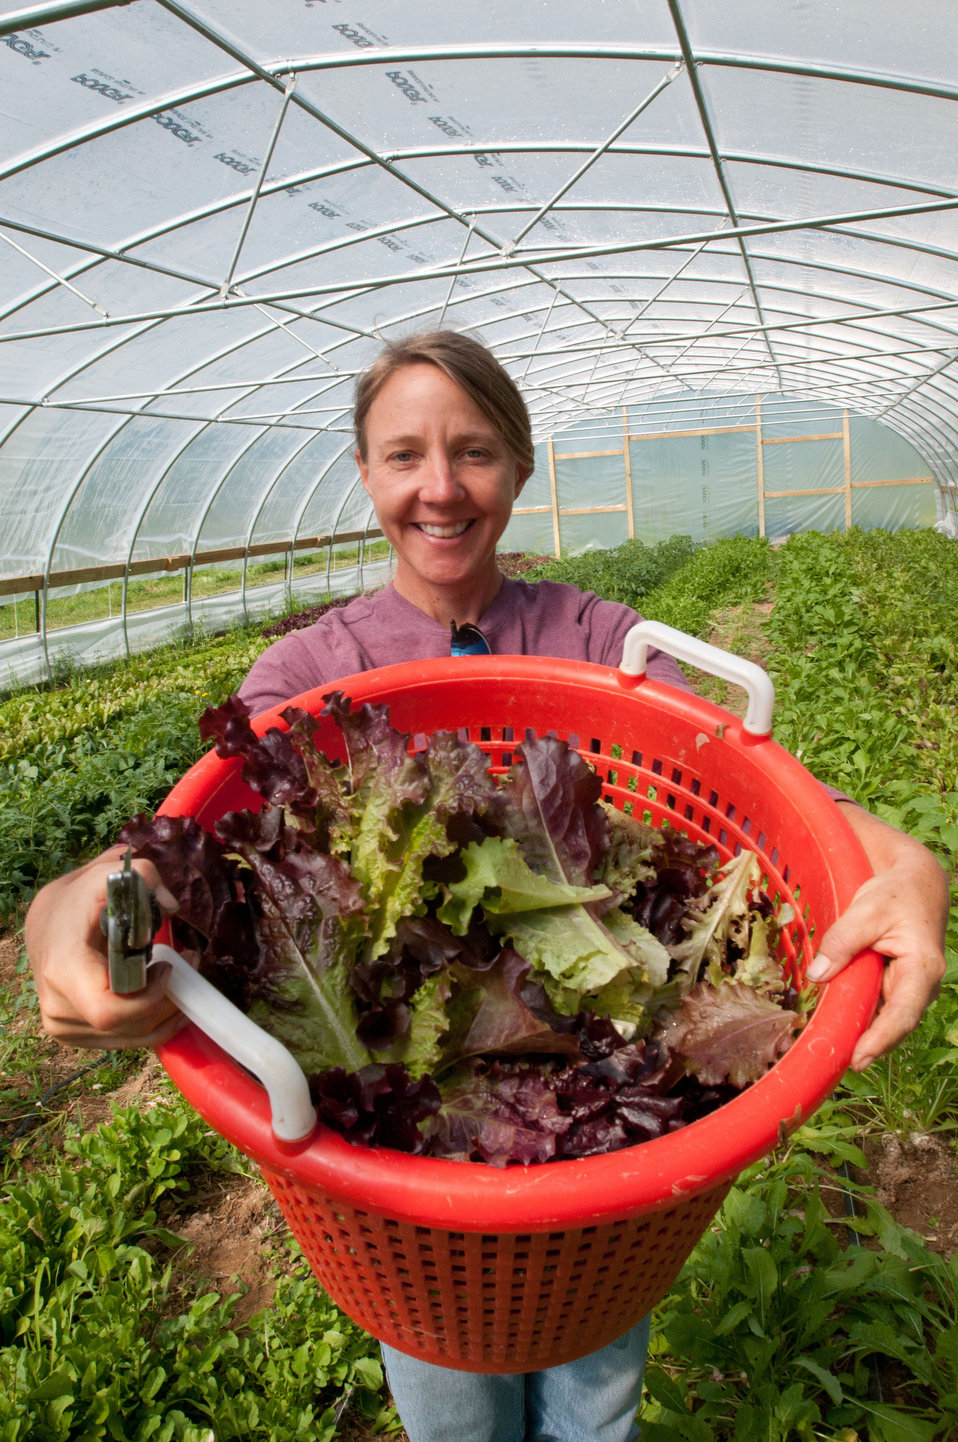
Fall Line Farms; cooperative, co-op; Richmond, VA.

Amy's Organic Garden owner Amy Hicks harvests greens at her farm in Charles City, VA on May 5, 2011. Ms. Hicks' farm participates with Fall Line Farms a local food cooperative in the Richmond, VA area that offers a wide variety of household food staples and specialty items on an ever changing inventory of fruits, vegetables, meats, soaps, eggs, cheeses, flowers, honey, pastas, sauces, syrups, baked goods, mushrooms, flour and grains. Suppliers post what they have on a Lulus Local Food online listing and customers (who pay seasonal dues) can make their selection. Then every Thursday suppliers team up with other suppliers to deliver orders to, one of several pick-up points, designated by the customer in or around the Richmond area.